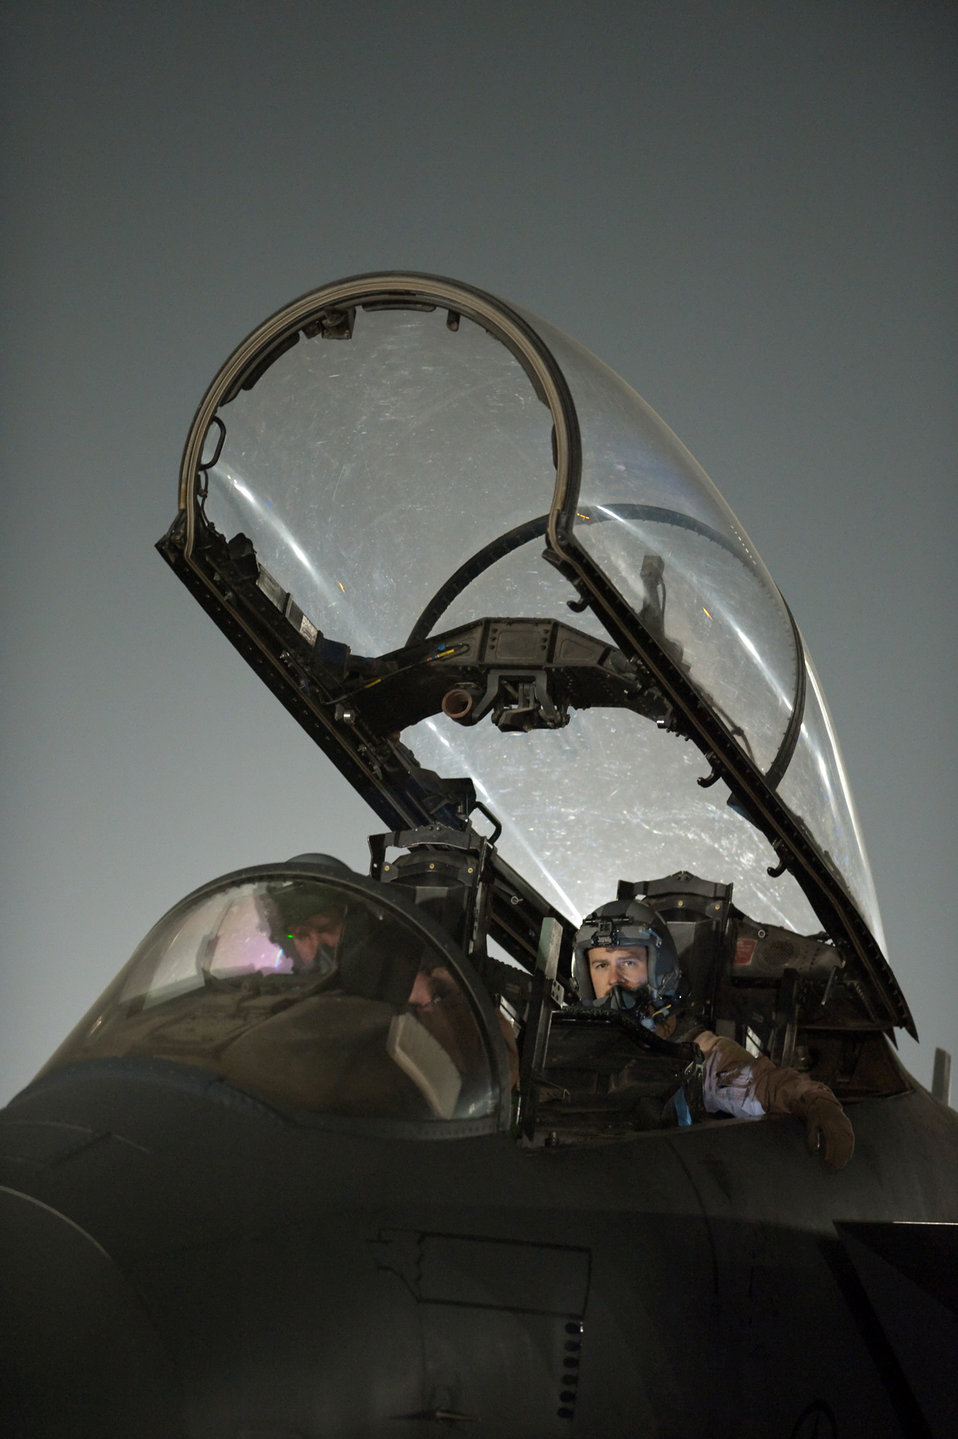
Let's roll

Capt. Kellen Sick (left) and Maj. Aaron Ruona, both with the 336th Expeditionary Fighter Squadron, prepare their F-15E Strike Eagle to take off on a combat mission from Bagram Airfield, Afghanistan, Jan. 4, 2011. The squadron performs close-air-support missions within the local area and is deployed from Seymour Johnson Air Force Base, N.C.